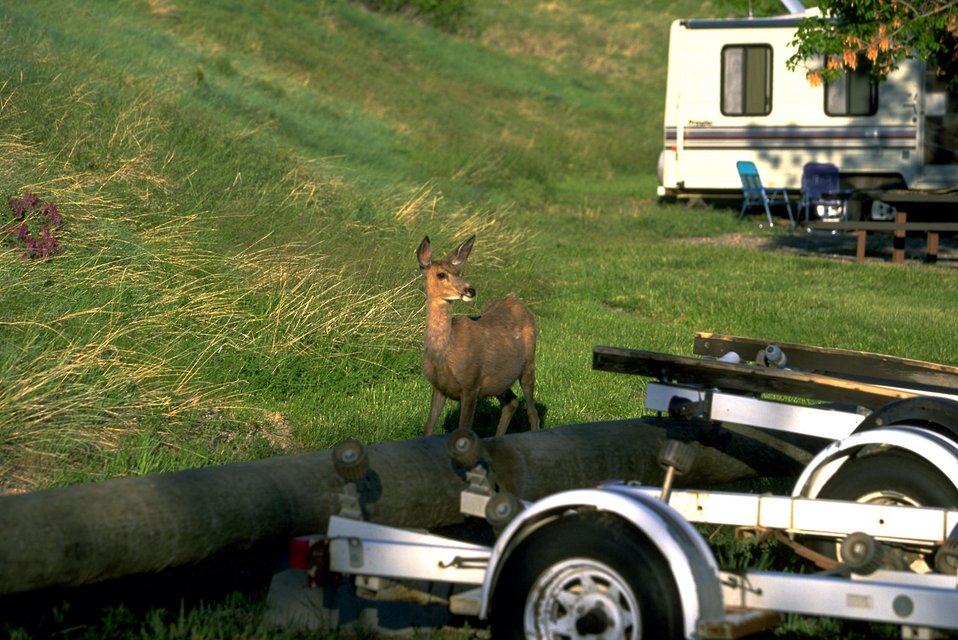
A deer close to a recreational vehicle at Holter Dam